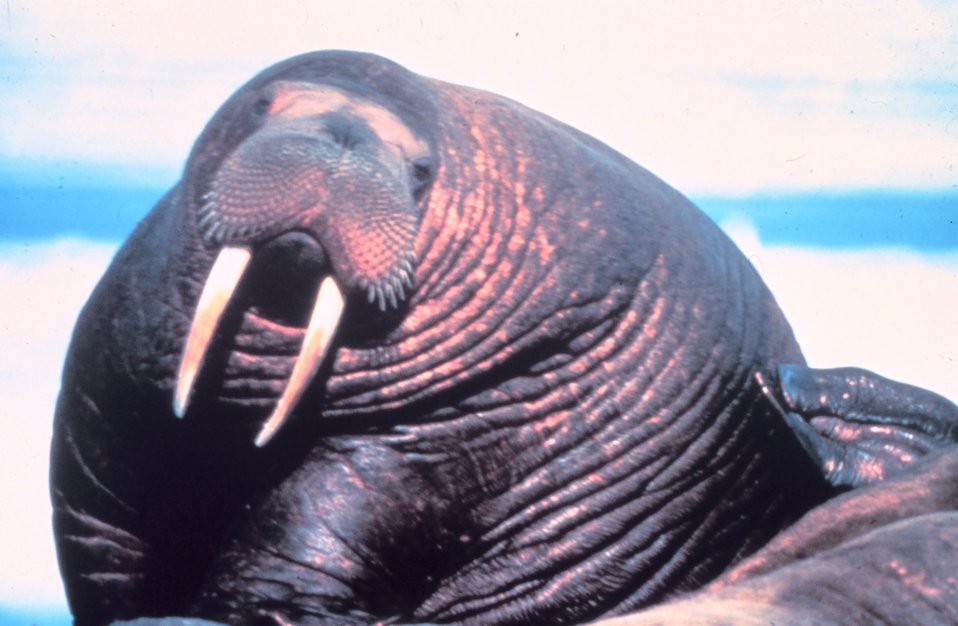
Large fat walrus - Odobenus rosmarus divergens - showing extent of blubber deposits.